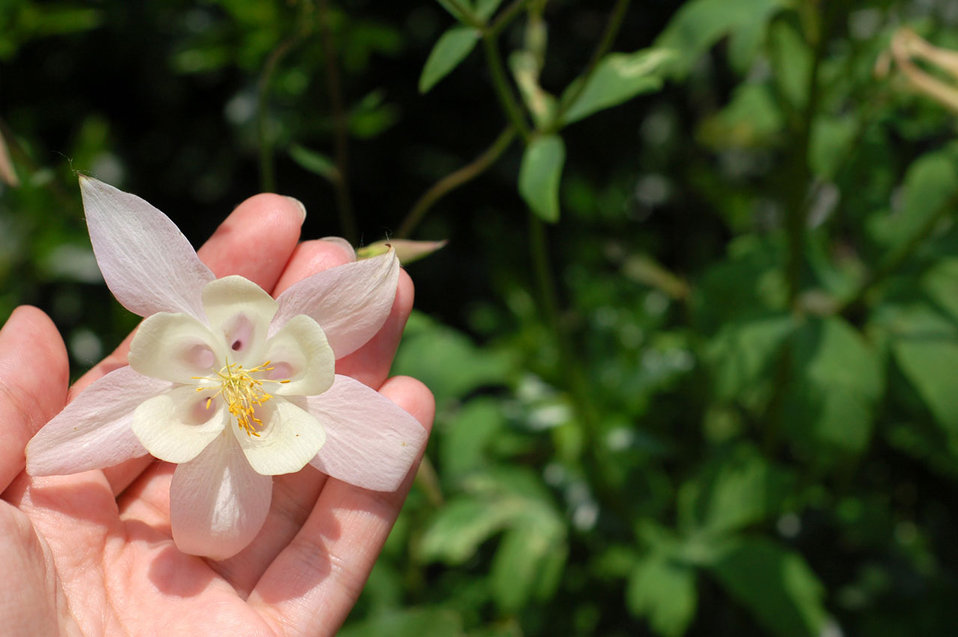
Pale pink flower

Pink aquilegia flower - quite a big one.